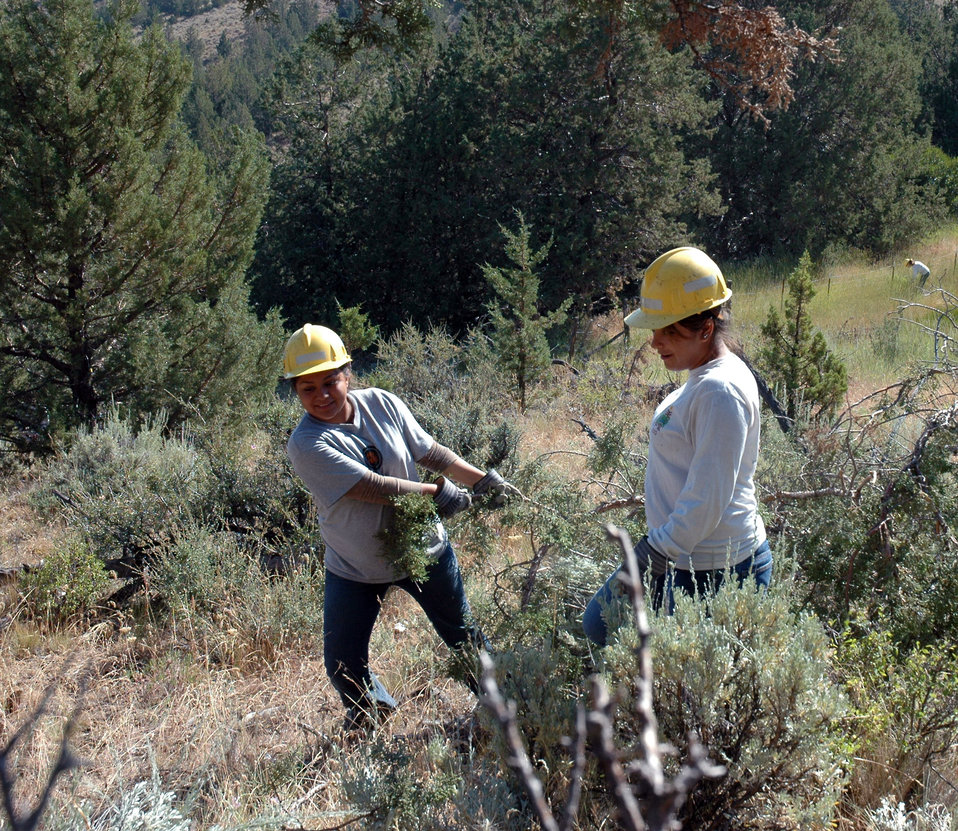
SummerJobsR6 018

Youth Conservation Corps crew members use their muscle to clear juniper slash on the Crooked River National Grassland in Oregon.